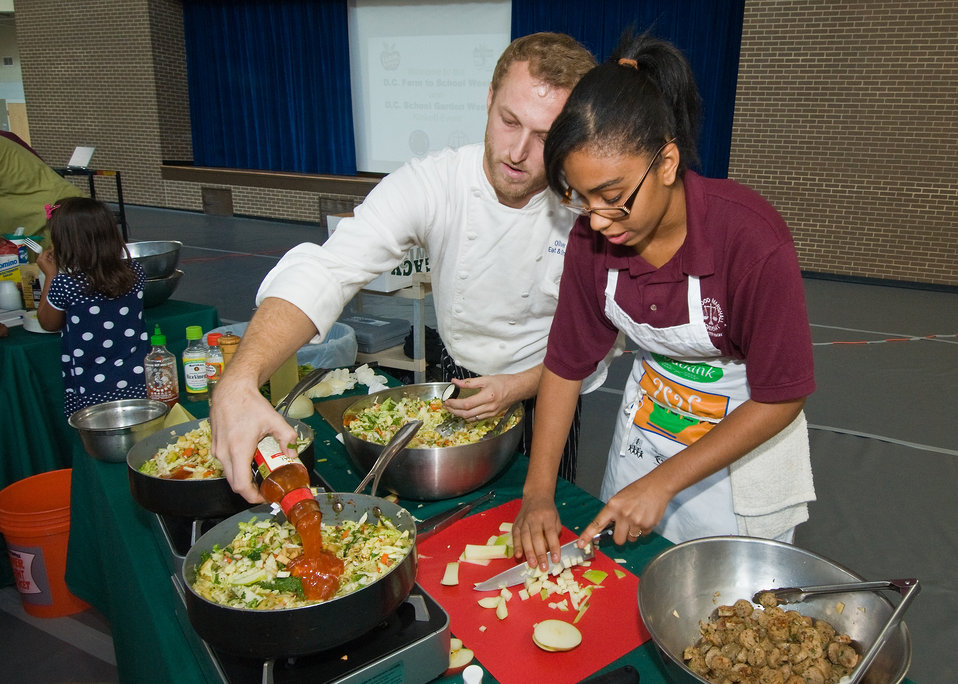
Chef Oliver Friendly (left), 'Eat and Smile Foods Catering' and Akasha-Regine Rodgers (right), a senior at Thurgood Marshall Academy prepare 'Spicy Apple Slaw with Chicken Sausage' for the Chef Competition of the D.C. Farm to School and D.C. School Garden Week at the Savoy Elementary and Thurgood Marshall Academy shared campus in Washington, DC, Tuesday, October 12, 2010. At the event local chef’s created healthy, delicious recipes using local apple varieties to be judged by the students themselves. School children and a partnership of community organizations have responded to First Lady Michelle Obama’s goal to end childhood obesity by building school gardens, providing healthier foods in school meals, and helping kids connect with local food and agriculture. USDA Photo 10di1522-58 by Bob Nichols.